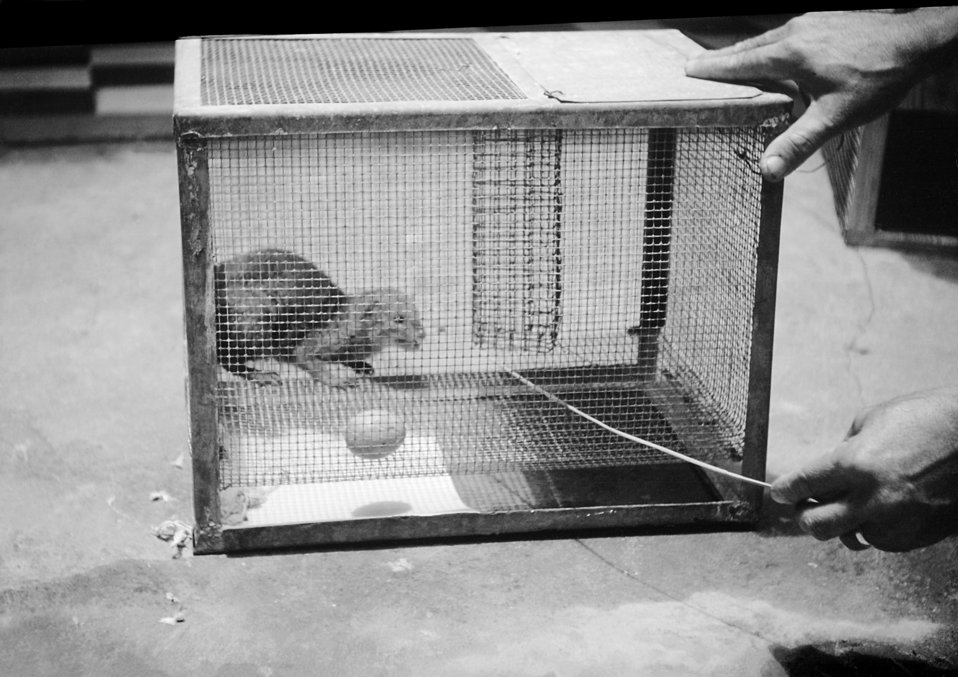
This rabid mongoose is being quarantined in a cage in Puerto Rico.